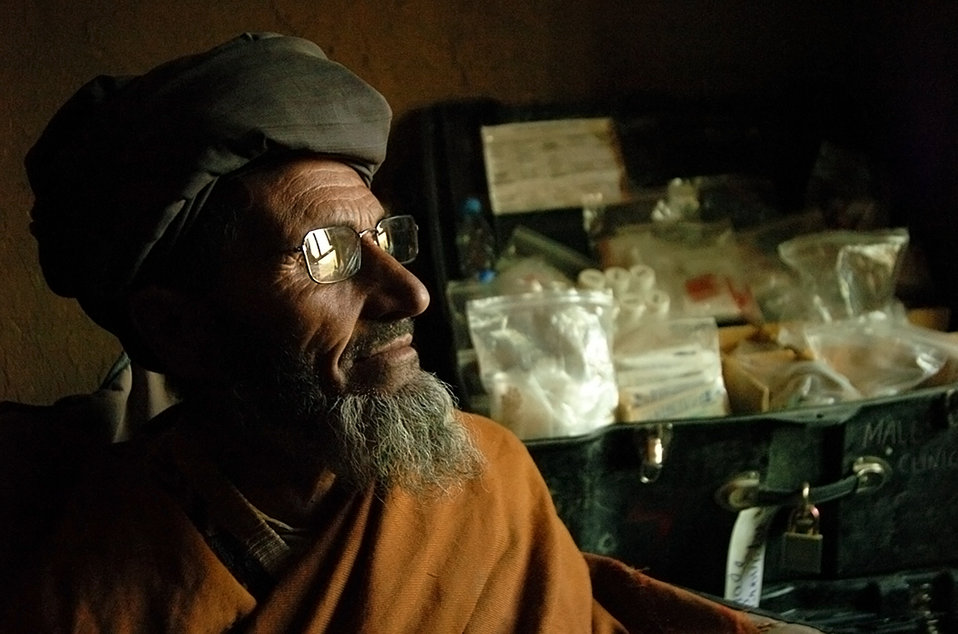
Feeding camels is tiresome

An Afghan man tries on a pair of glasses and observes the area around him, for the first time in many years, during a medical outreach program May 15, 2010.